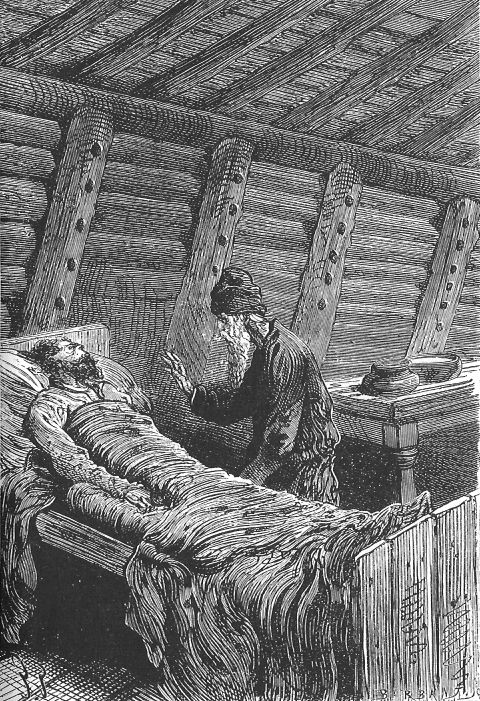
An illustration from the novel 'Michael Strogoff: The Courier of the Czar' by Jules Verne drawn by Jules Férat. Polski: Ilustracja powieści Juliusza Verne'a 'Michał Strogow, kurier carski' autorstwa Julesa Férata. Français : 'Michel Strogoff. Le courier du tzar', Jules Férat. Français : « Ne parle pas. Tu es encore trop faible. »